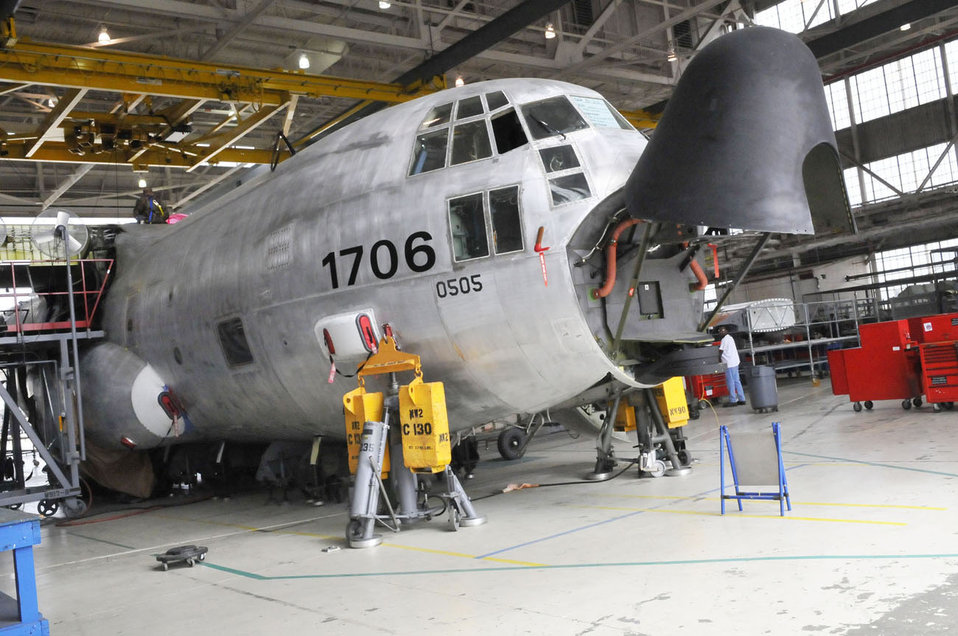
Maintenance Excellence

A Coast Guard C-130 undergoes maintenance at Warner Robins Air Logistics Center, Robins Air Force Base, Ga. The ALC's C-130 Programmed Depot Maintenance team was awarded the Robert T. Mason Depot Maintenance Excellence Award for outstanding achievement in weapon system and military equipment maintenance..